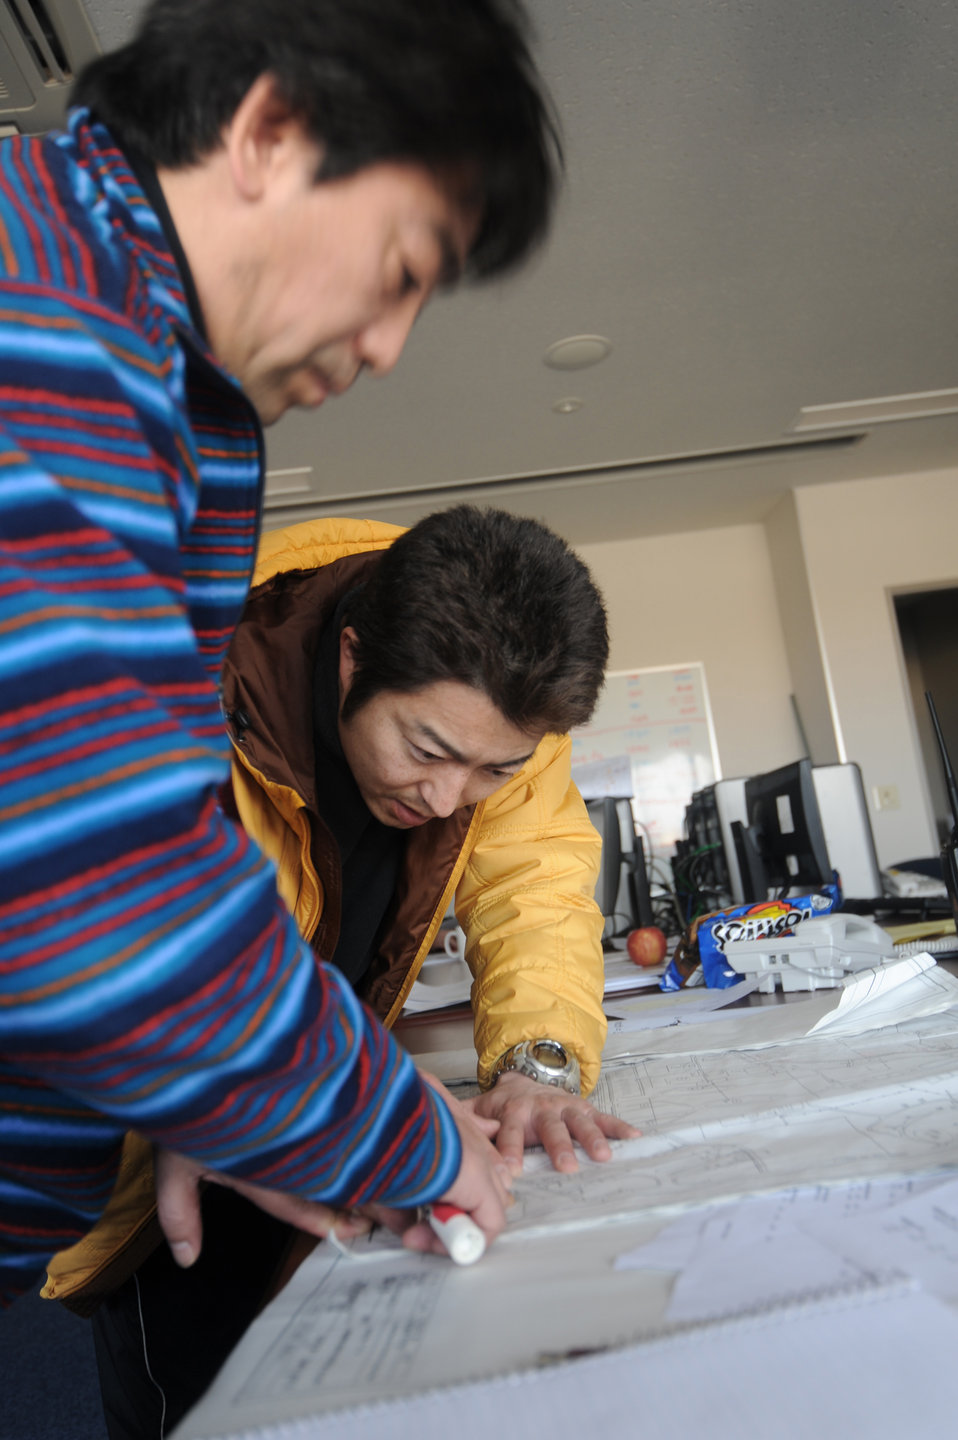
35th CES restores power

Local nationals working in the 35th Civil Engineer Squadron base energy nerve cell study a base map March 19, 2011, at Misawa Air Base, Japan. Engineers are working around the clock to keep base operations running on two-thirds the normal power supply.